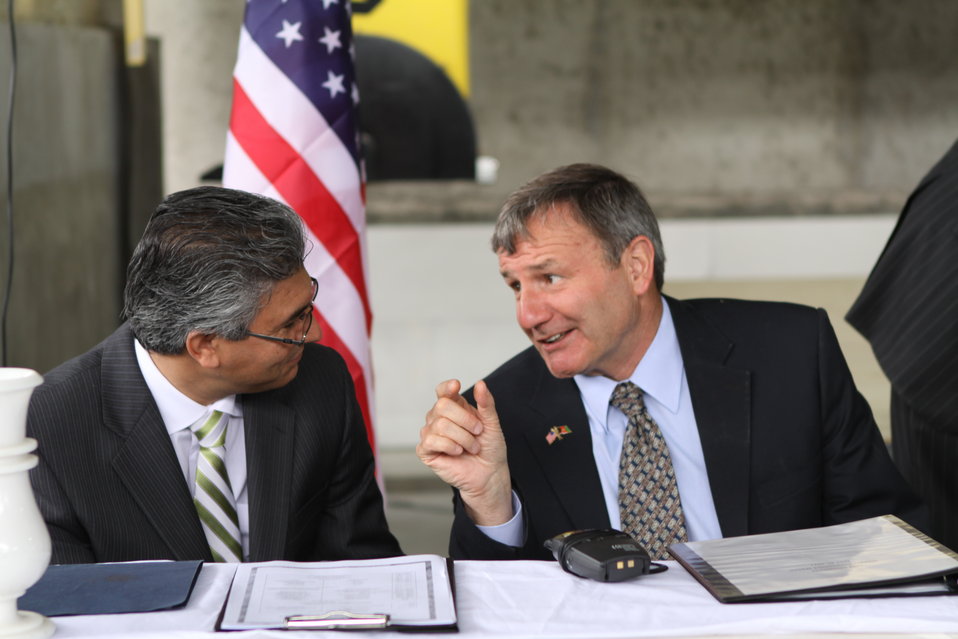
100525 Hirat Marble Conference 128